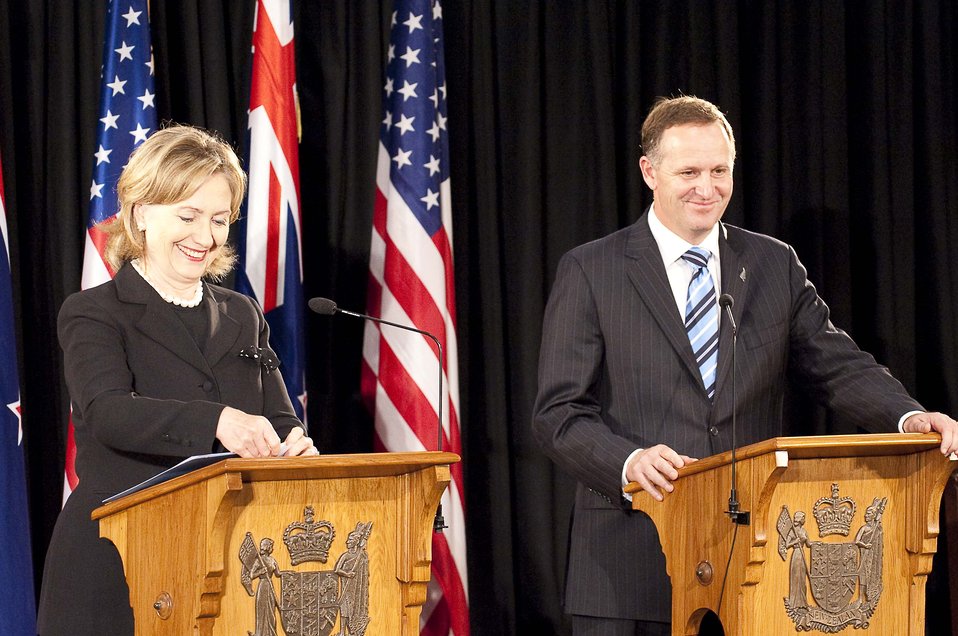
Secretary Clinton Holds a Joint Press Availability With New Zealand Prime Minister Key

U.S. Secretary of State Hillary Rodham Clinton holds a joint press availability with New Zealand Prime Minister John Key, in Wellington, New Zealand, on November 4, 2010.